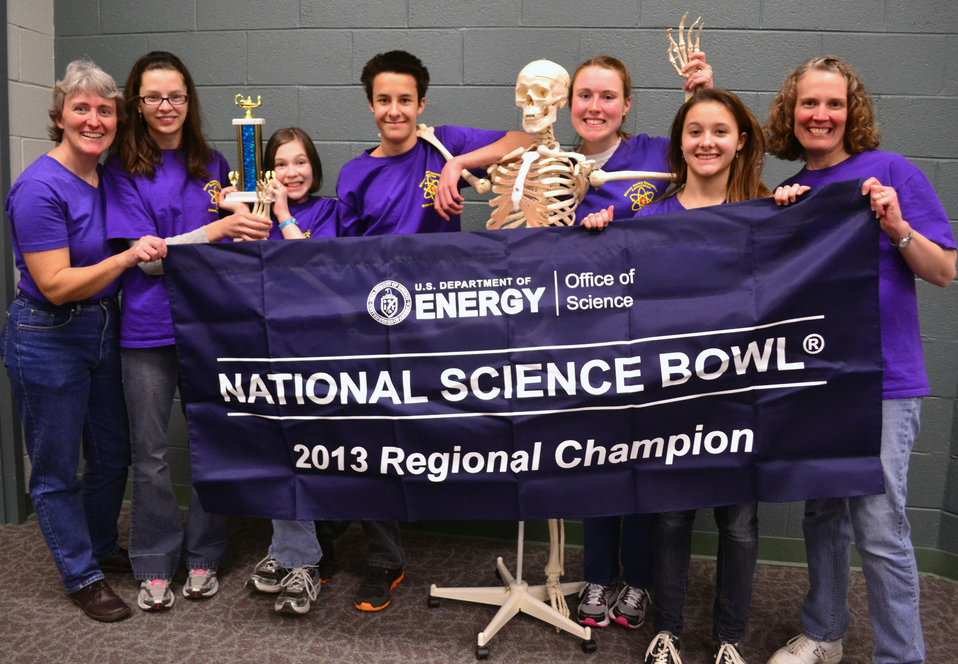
Blount Home Educational Association First Place DOE Tennessee Middle School Science Bowl Oak Ridge

13-008 DOE photo Lynn Freeny DOE Tennessee Middle School Scence Bowl 2-2-2013 Oak Ridge Tennessee